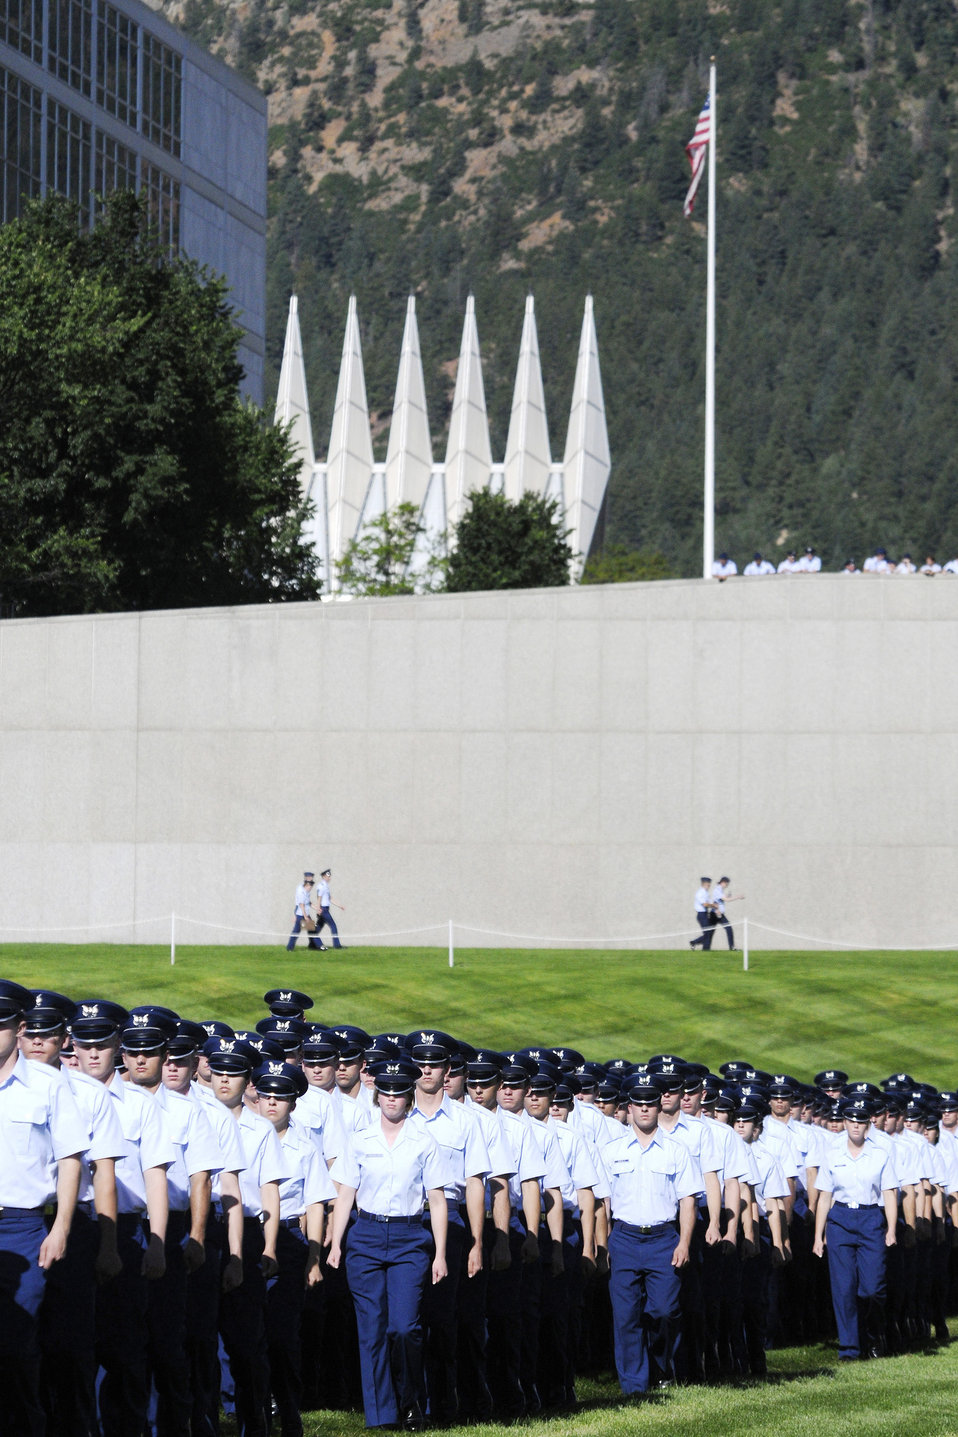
Academy acceptance parade

Members of the U.S. Air Force Academy Class of 2013 march onto Stillman Field during the Acceptance Parade Aug. 5 at the Academy in Colorado. The parade marks the official end of Basic Cadet Training and formally welcomes the new class into the cadet wing.